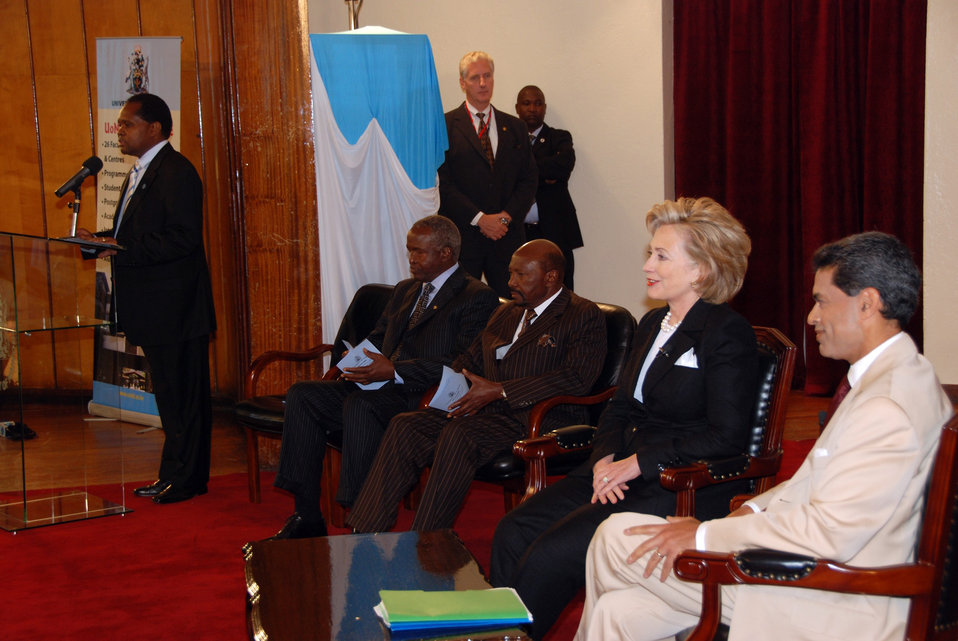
Secretary Clinton Participates in Town Hall Meeting

U.S. Secretary of State Hillary Rodham Clinton participates in a town hall meeting at the University of Nairobi in Nairobi, Kenya August 6, 2009.